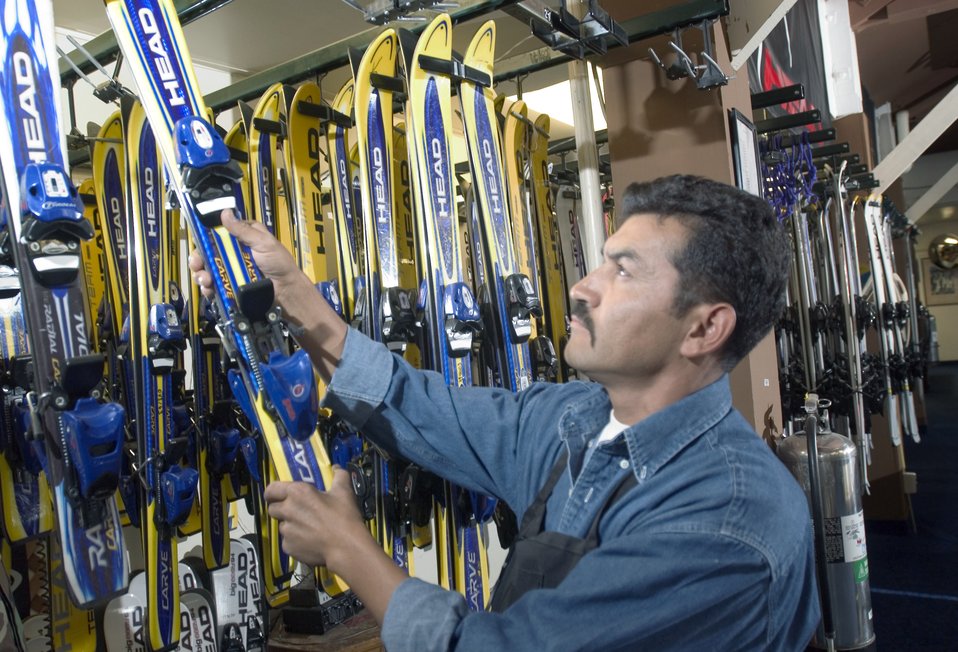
Mountain Home 'maintainer' readies skis for season

MOUNTAIN HOME AIR FORCE BASE, Idaho -- Raul Hernandez hangs a pair of children's skis on a storage rack next to dozens of others at the base outdoor recreation supply office here. He cares for all the winter equipment.